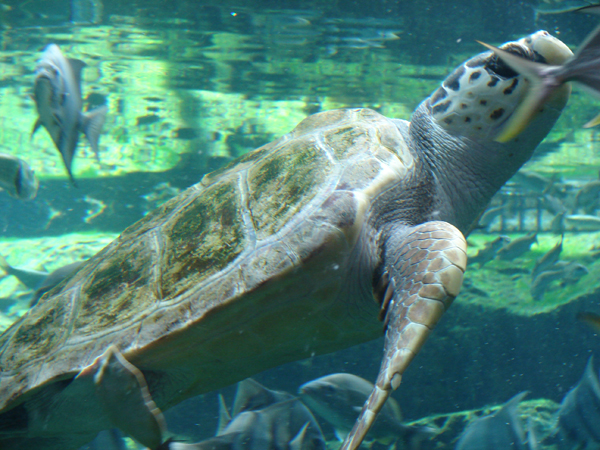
Photo by Angela Grider. Loggerhead Sea Turtle at the Georgia Aquarium.